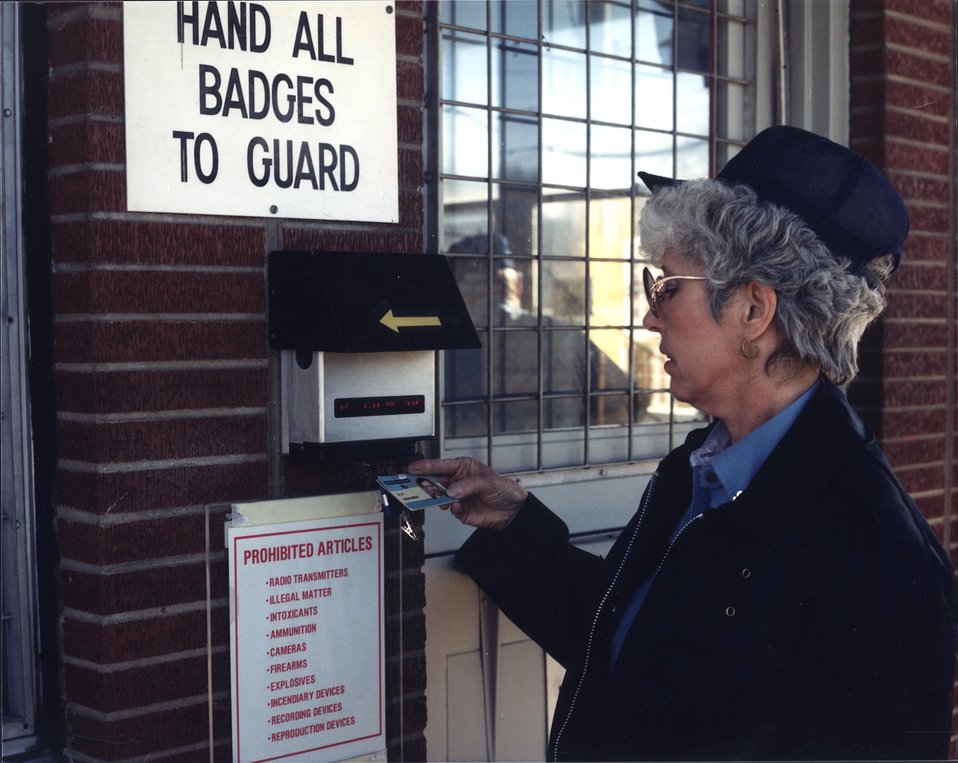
Employee with badge at entrance to facility.